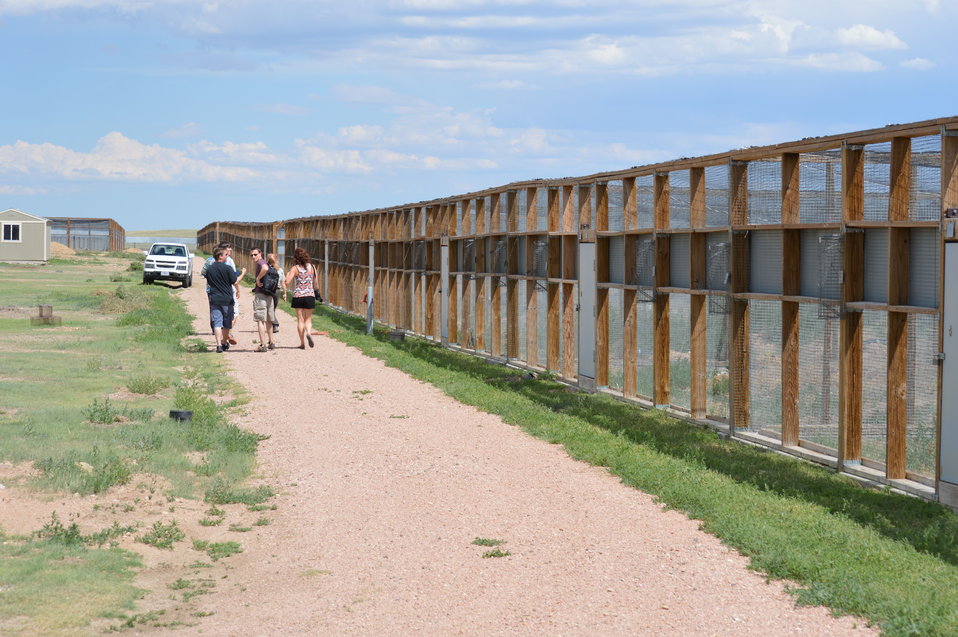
Interns visit the NBFFCC

In the summer of 2012, USFWS Region 6 interns visited the National Black-footed Ferret Conservation Center (NBFFCC) in Colorado to learn how the program reintroduces the endangered Black-footed ferret back into its native habitat.